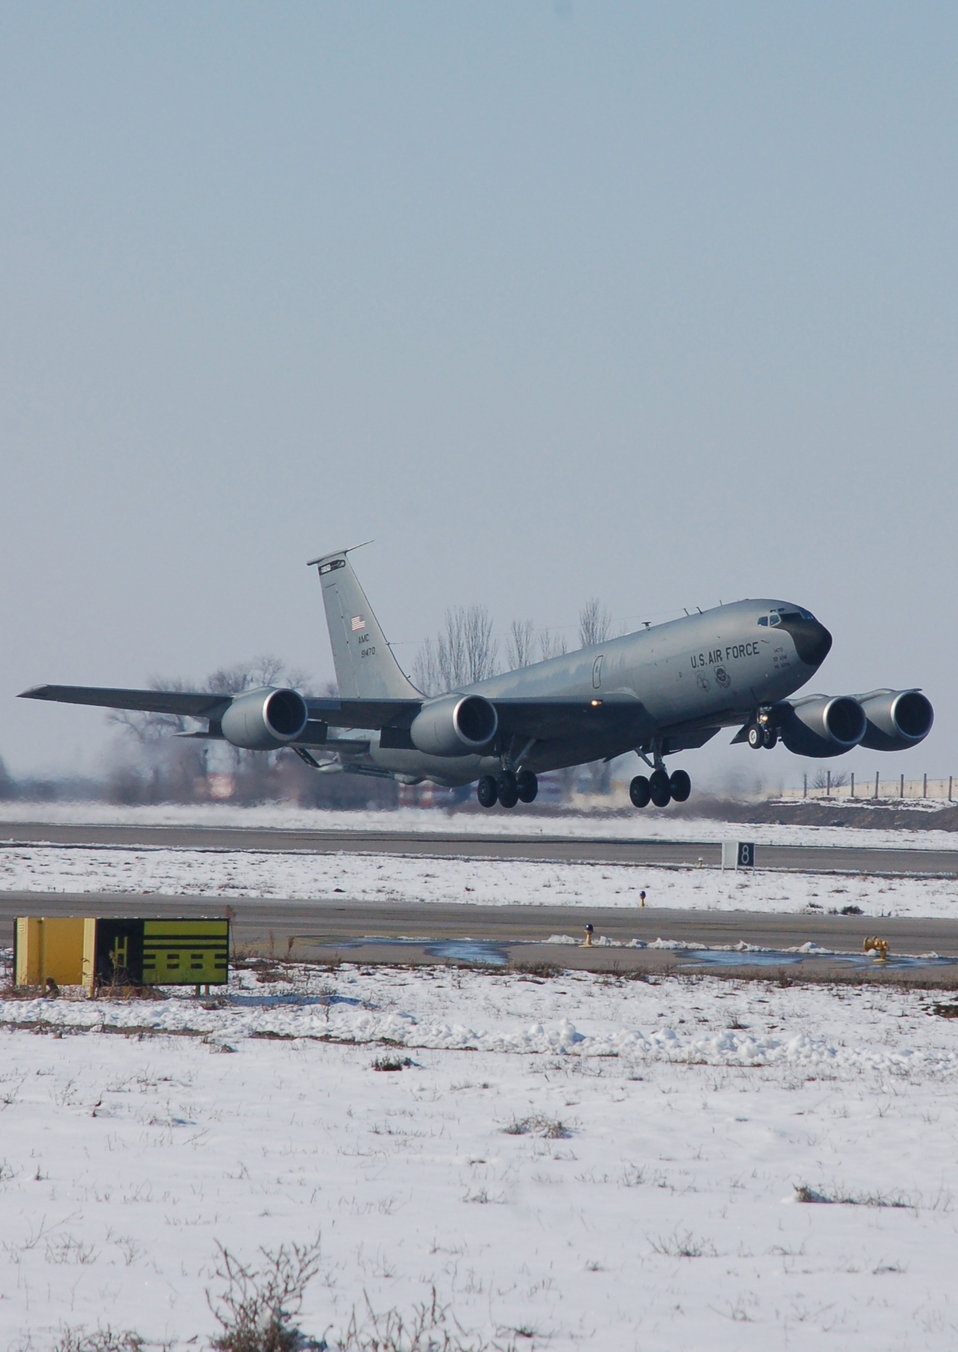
Fueling the fight in Afghanistan

A KC-135 Stratotanker takes off from Manas Air Base, Kyrgyzstan, for a refueling mission over Afghanistan, Feb. 6. Manas AB serves as the premier air mobility hub for Operation Enduring Freedom, providing round-the-clock aerial refueling and support for cargo and personnel transiting in and out of Afghanistan.